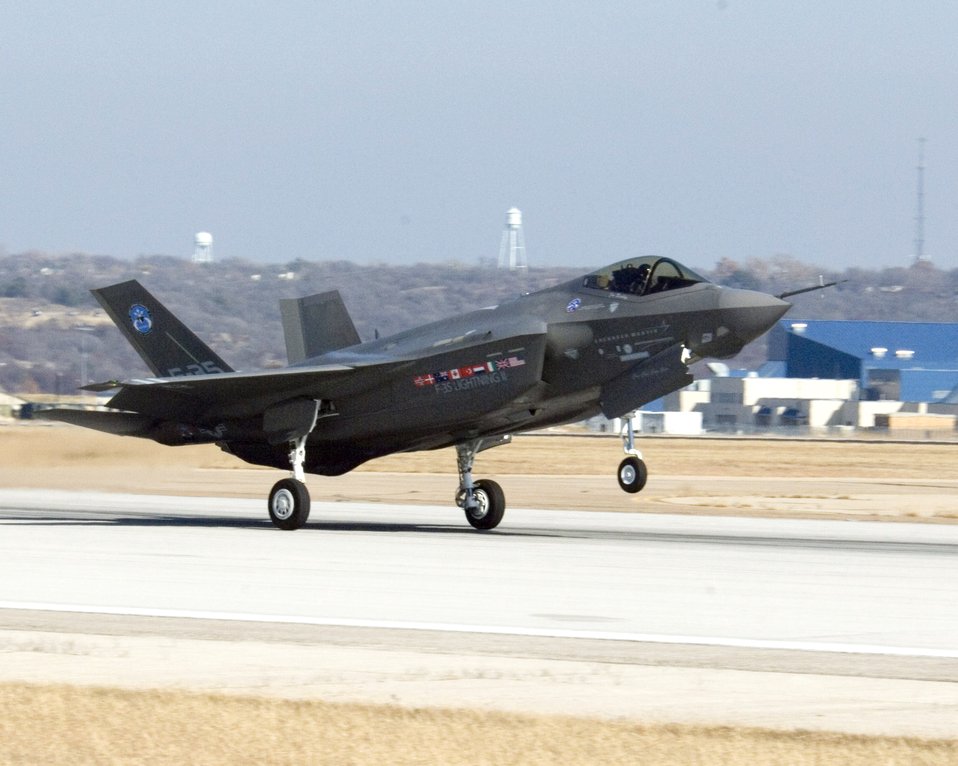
Lightning in sky for first time

The F-35 Lightning II Joint Strike Fighter goes wheels up for the first time Dec. 15 at Fort Worth, Texas.